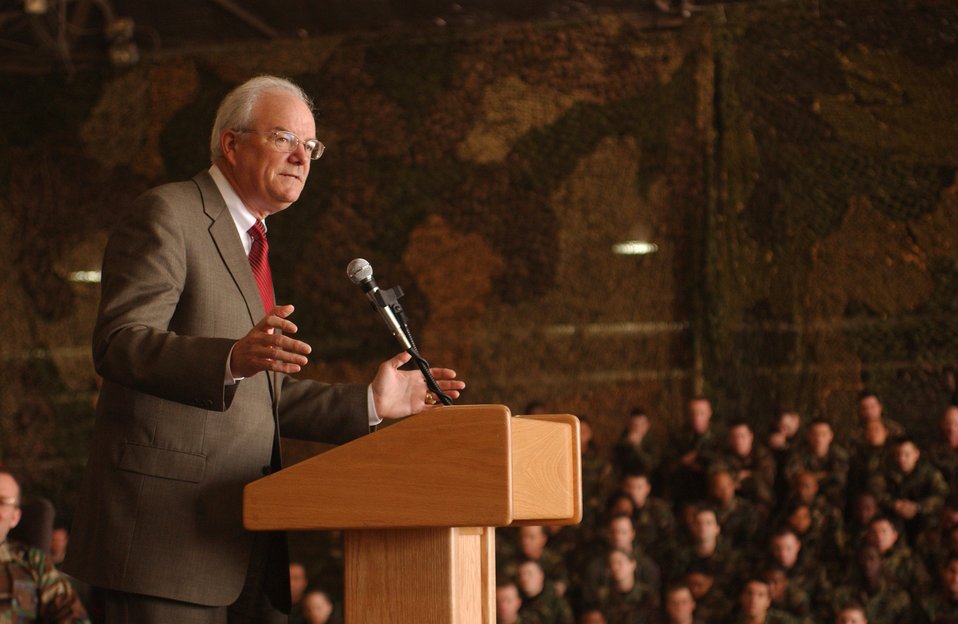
Secretary of the Air Force visits Korea

Secretary of the Air Force Michael W. Wynne speaks to Airmen Tuesday, March 21, 2006, during his visit to Osan Air Base, South Korea.